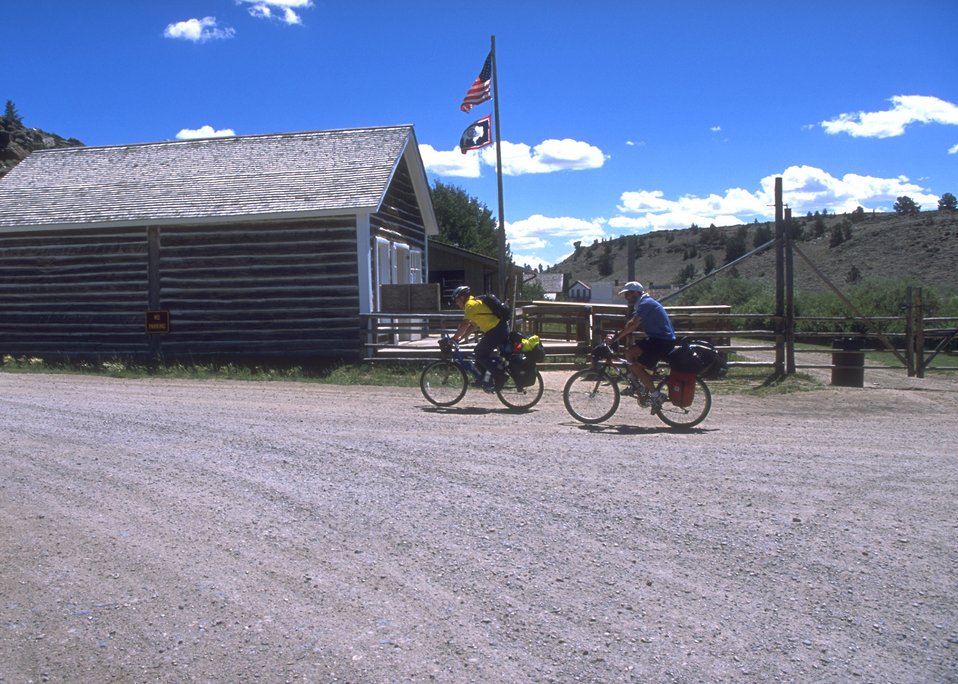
Biking the Continental Divide Trail at South Pass City, Lander Field Office.